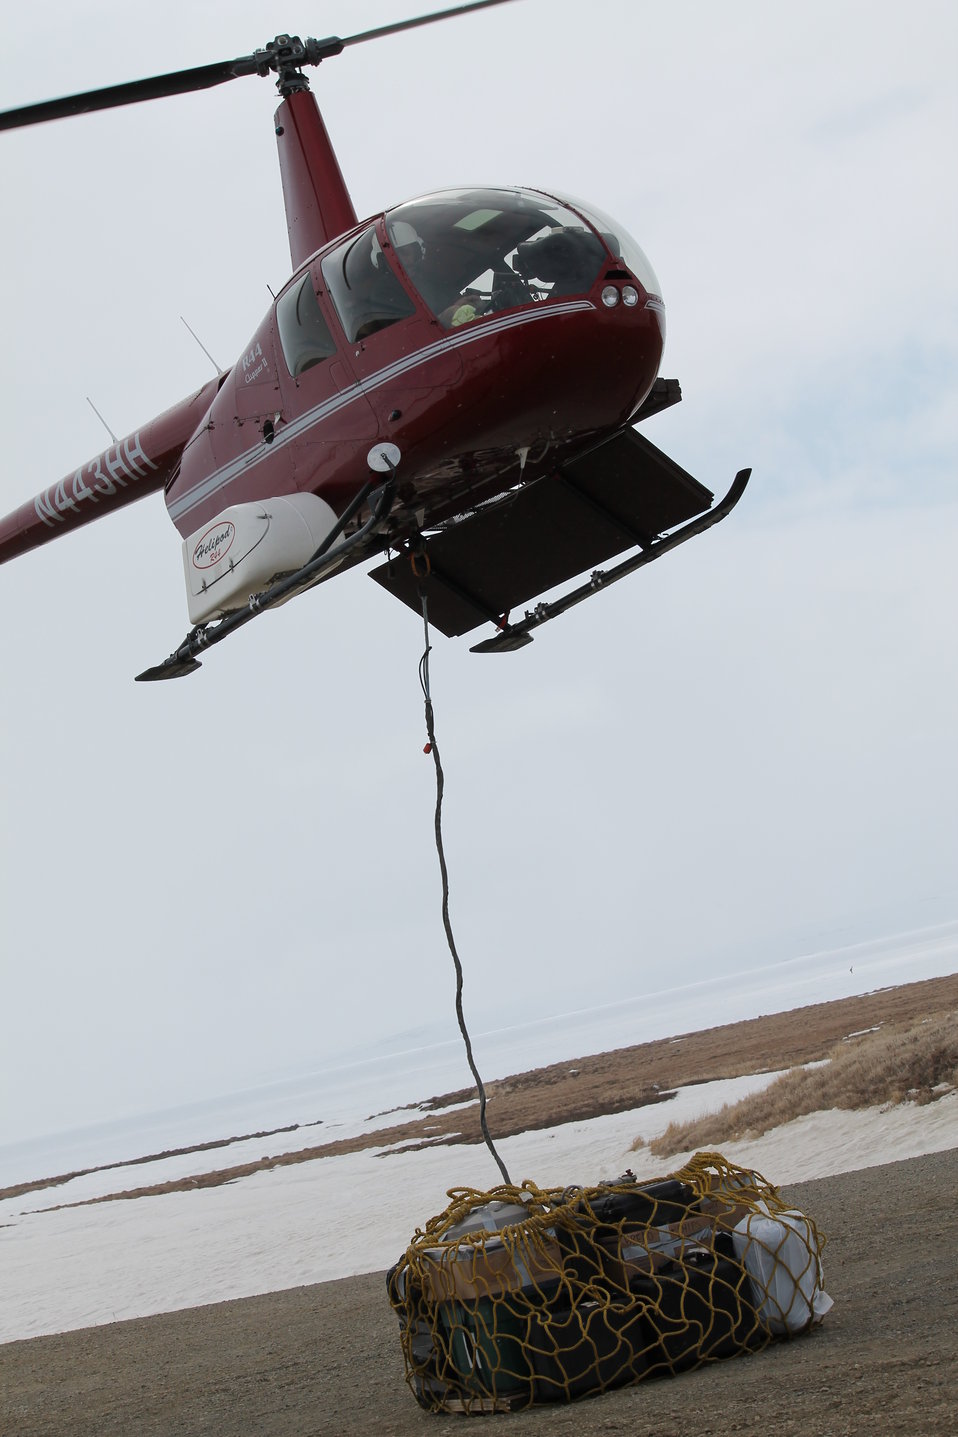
Helicopter Use

When camps are sent out before break-up the conditions may not be suitable for a ski-plane or a float-plane. In cases like this helicopters are used to swing gear to field camps.

USFWS Yukon Delta NWR